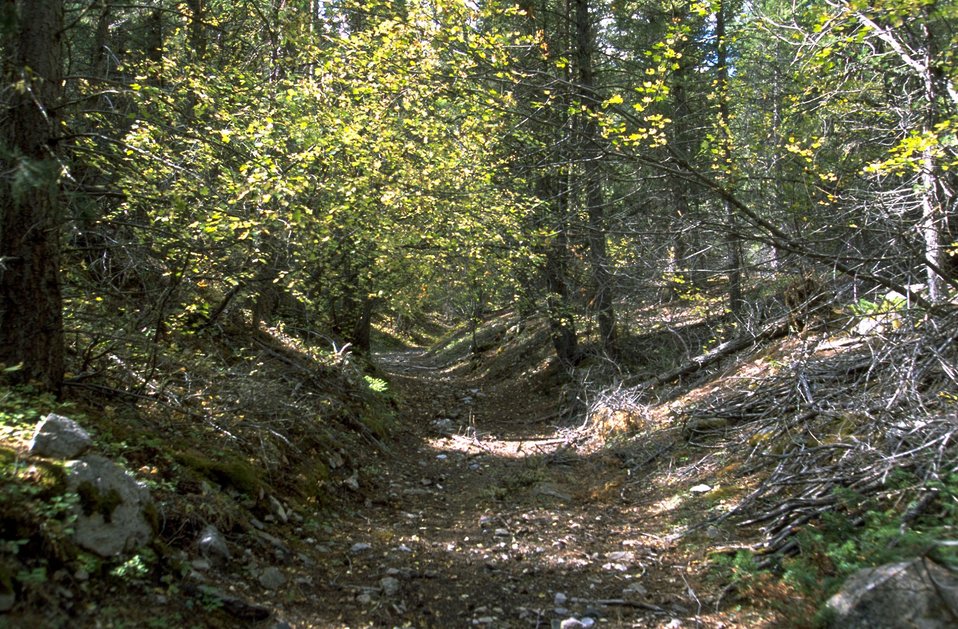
Creekbed in Centennial Mountains